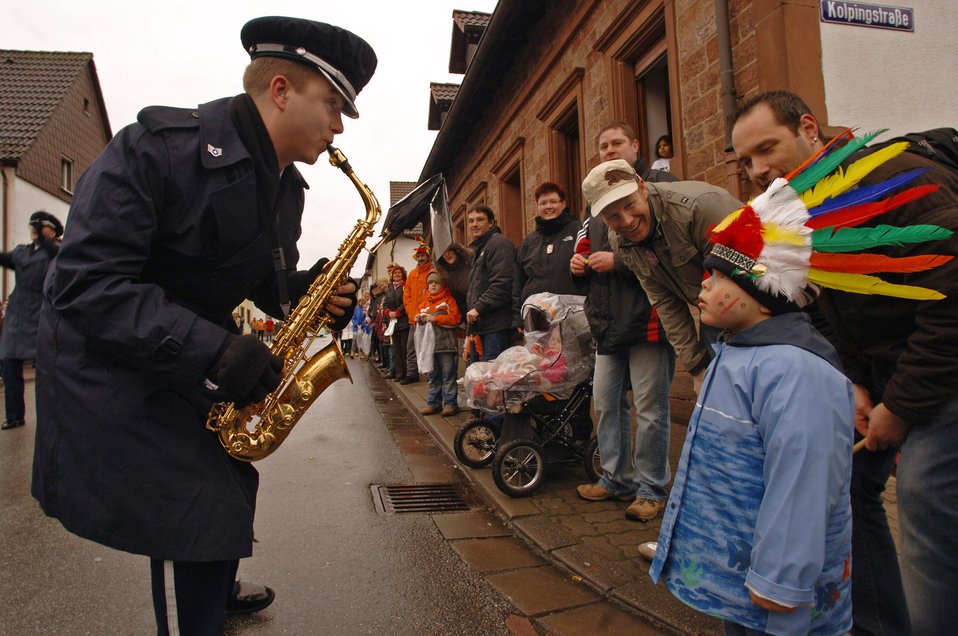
This tune's just for you...

Staff Sgt. Tag Tux personally delivers some tunes to six-year-old Benjamin Konrad in a village outside Ramstein Air Base, Germany, where spectators endured cold, wet weather, Feb. 5, to watch the annual Fat Tuesday parade that marked the last day of the Fasching season.